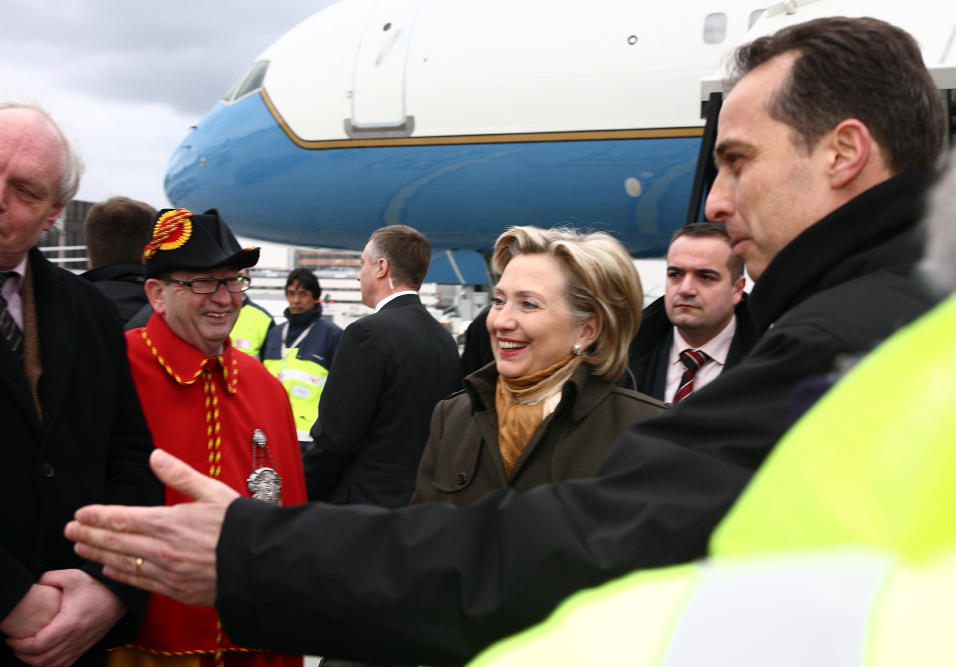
Arrival in Geneva, Switzerland

Secretary Clinton arrives in Geneva, Switzerland March 6, 2009.